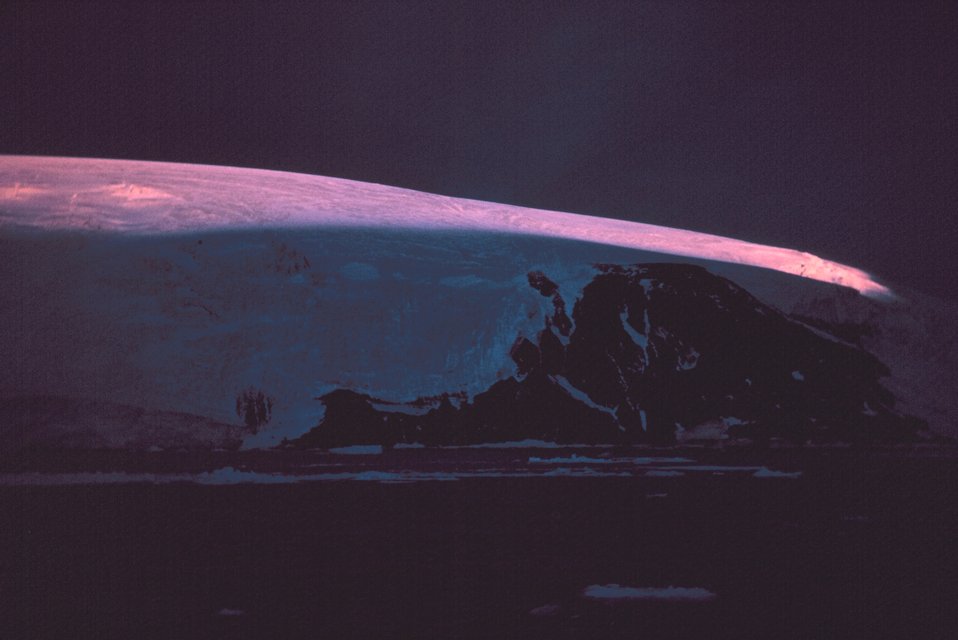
A streak of sunlight illuminates the top of Nansen Island. 64 35 S Latitude 62 06 W Longitude.